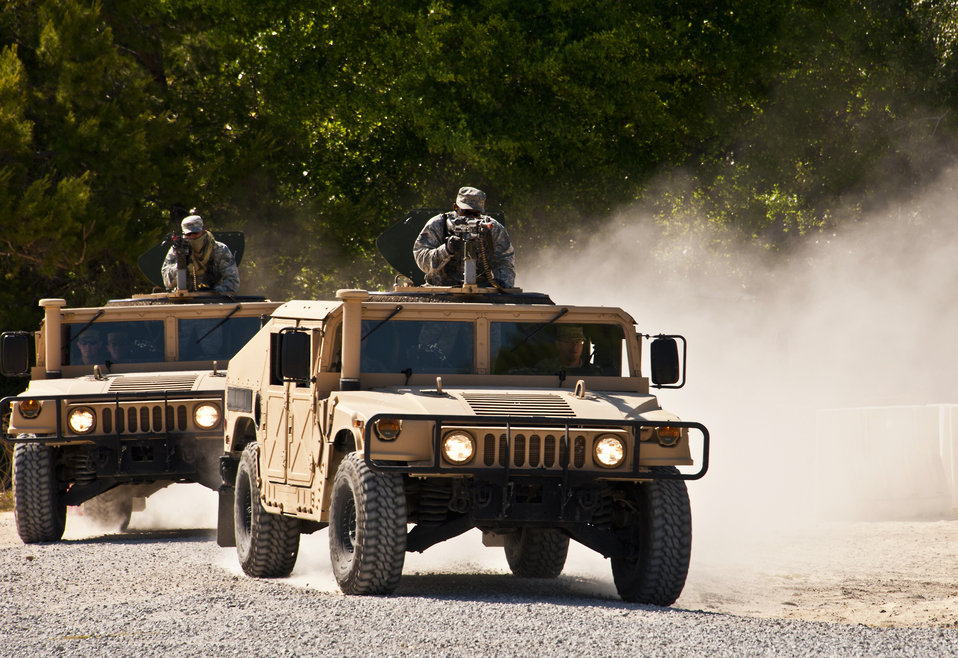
Brave Defender

Humvees roll into the Base Tango Village as part of a demonstration of Air Force Materiel Command's